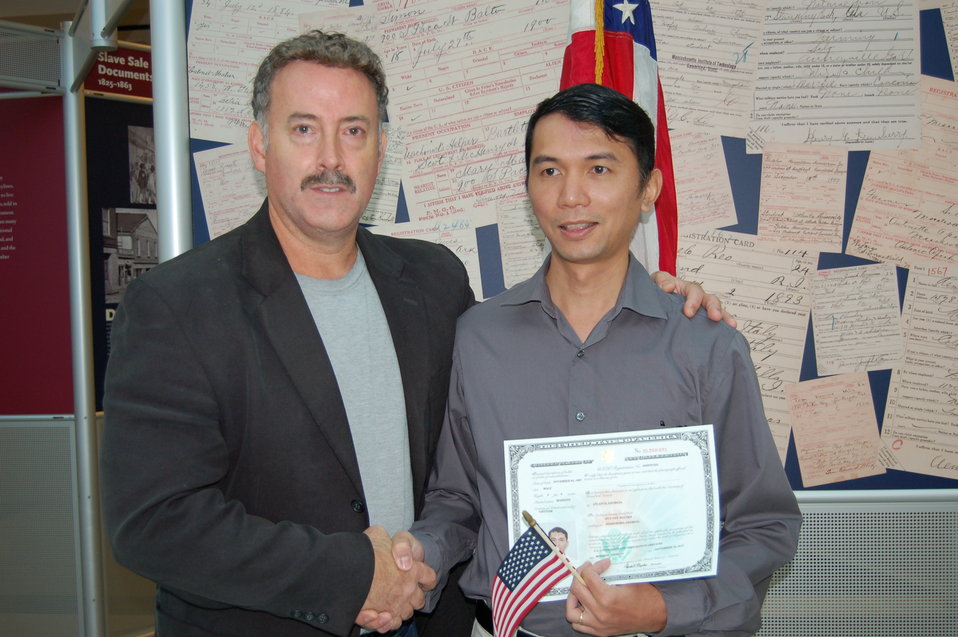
New Citizens